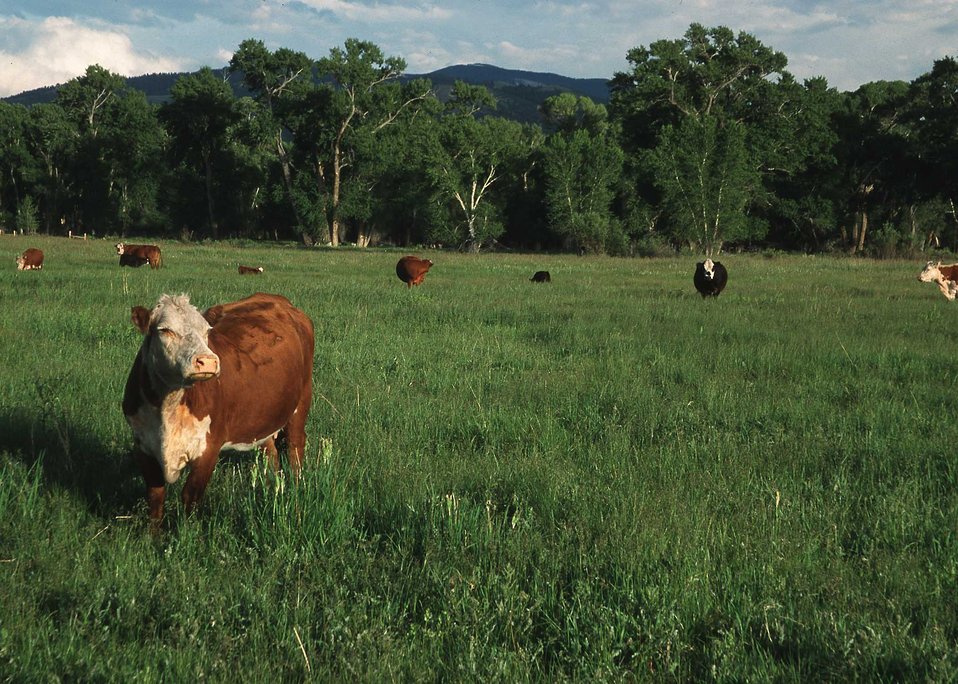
Cattle on a pasture

Cattle on an irrigated Pasture, FT Ranch.